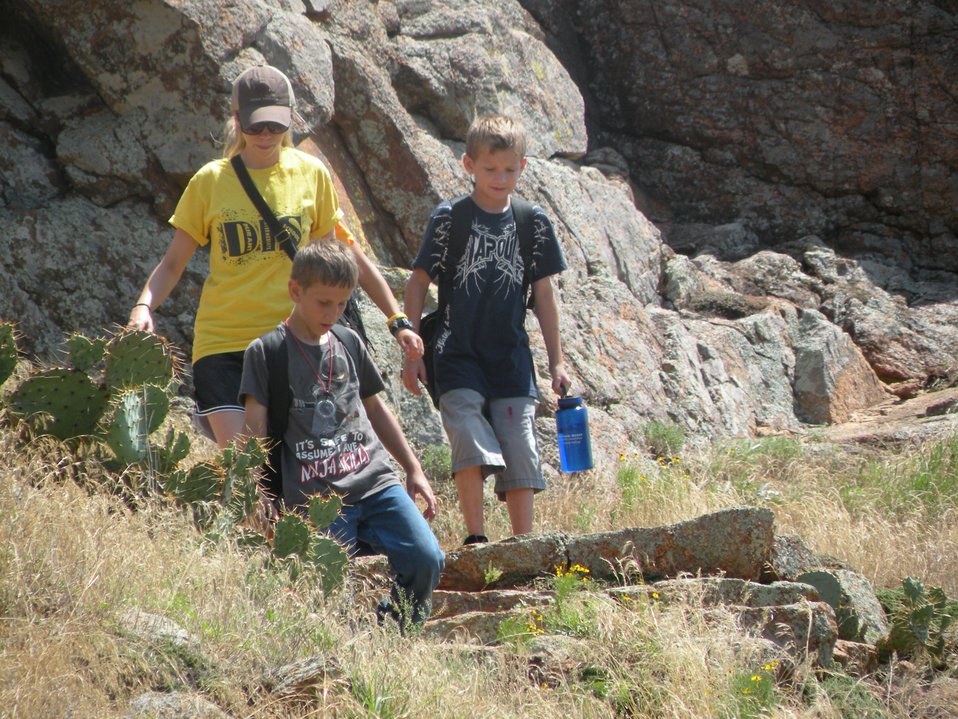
Wichita Mountains Nature Quest 2012

Wichita Mountains National Wildlife Refuge, Oklahoma.